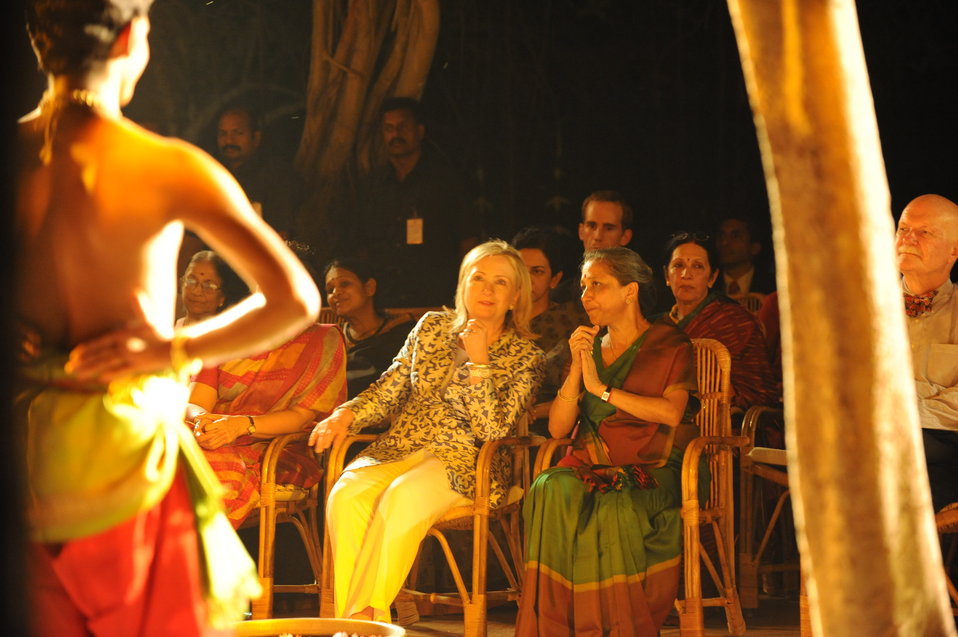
Secretary Clinton and Leela Samson Enjoy the Bharat Natyam Performance

U.S. Secretary of State Hillary Rodham Clinton and Leela Samson, Managing Director of the Kalakshetra Foundation, enjoy the Bharat Natyam performance at Kalakshetra in Chennai, India, on July 20, 2011. [Paul Cohn/ State Department photo]